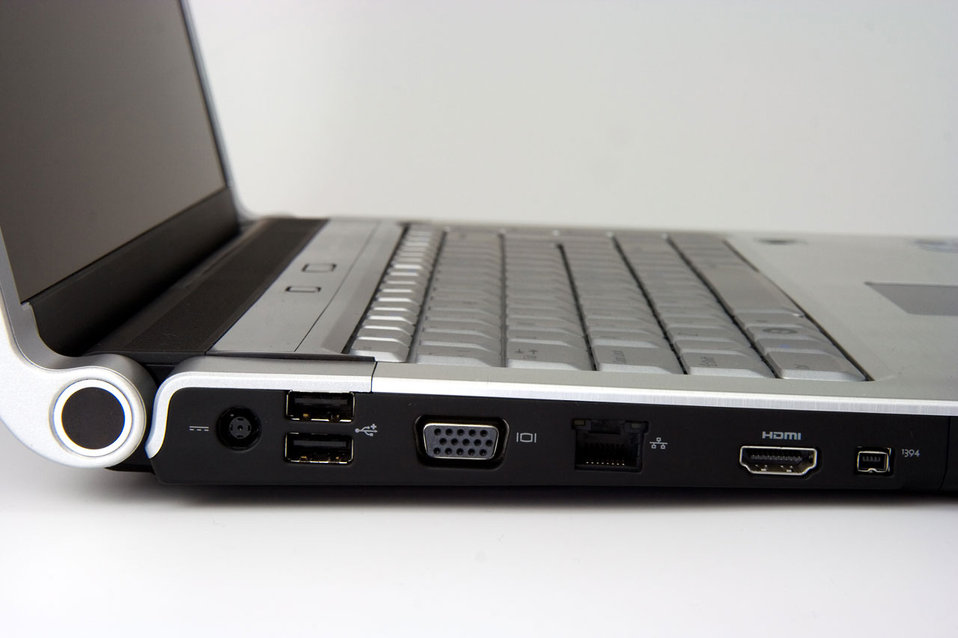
Computer connections

Several connections on the computer.